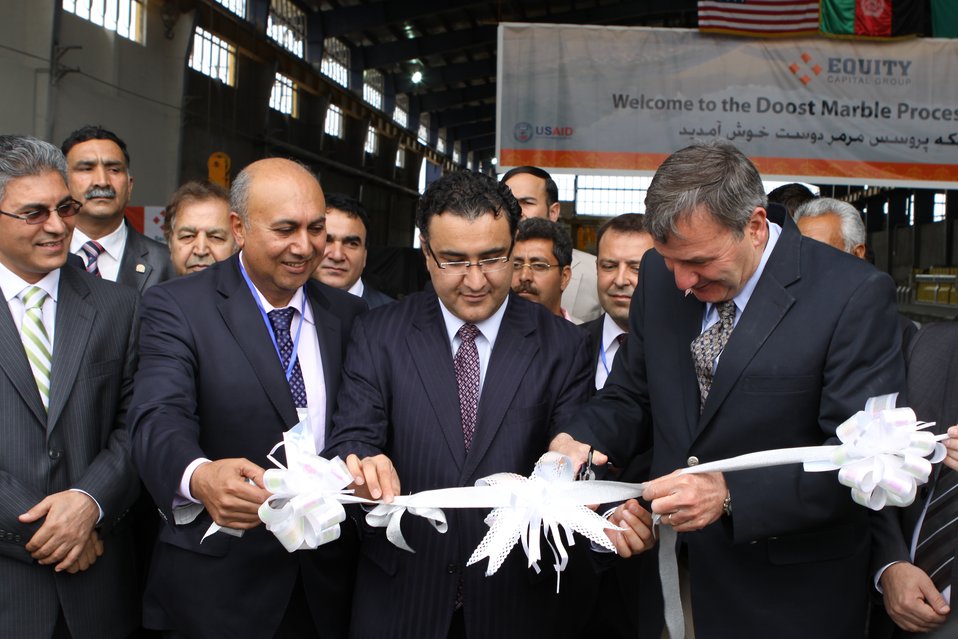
100525 Hirat Marble Conference 073